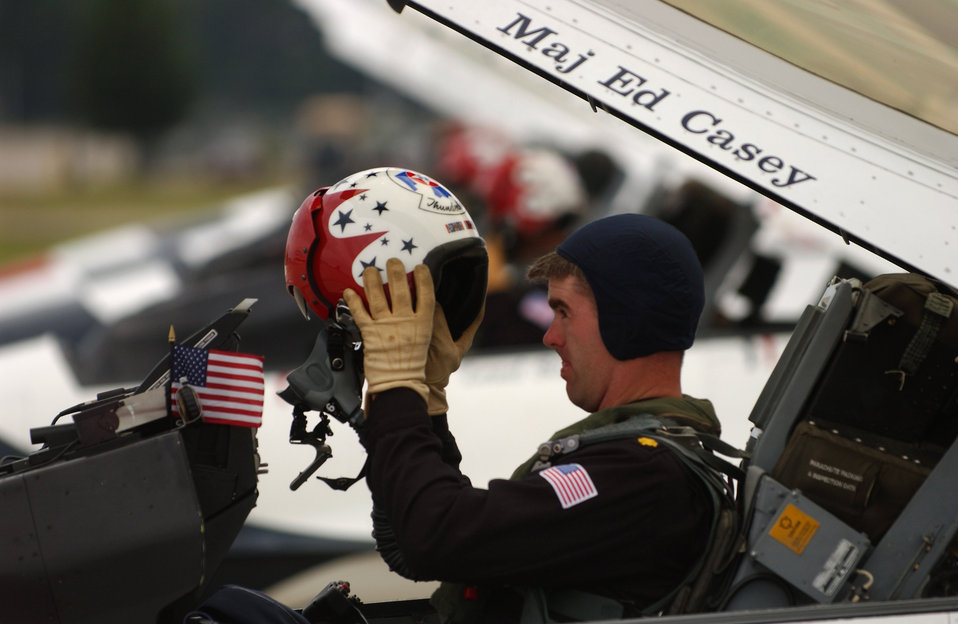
Pilots bid adieu to Thunderbird duty

Maj. Ed Casey dons his helmet prior to taking off for an air show in North Kingstown, Rhode Island. Major Casey is the Thunderbird #5 lead solo pilot and just finished his two-year tour with the Air Force Demonstration Squadron.